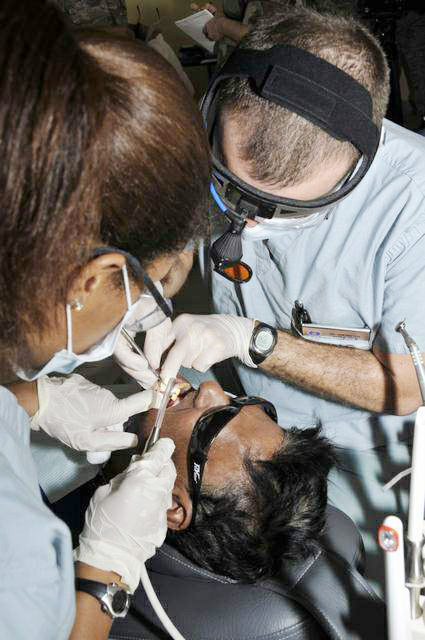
Airmen provide dental care to Guyanese patients

Maj.(Dr.) John Brewster and Airman 1st Class Tiffany Richard perform a tooth filling on a Guyanese man July 20 at the Diamond Primary School in Diamond, Guyana. The Airmen provided dental care to the local population for free during New Horizons Guyana, a $9 million exercise designed to strengthen ties with partner nations in Central and South America through combined quality of life improvement projects. Doctor Brewster is a dentist, and Airman Richard is a dental technician, both from the 59th Dental Training Squadron from Wilford Hall Medical Center at Lackland Air Force Base, Texas.